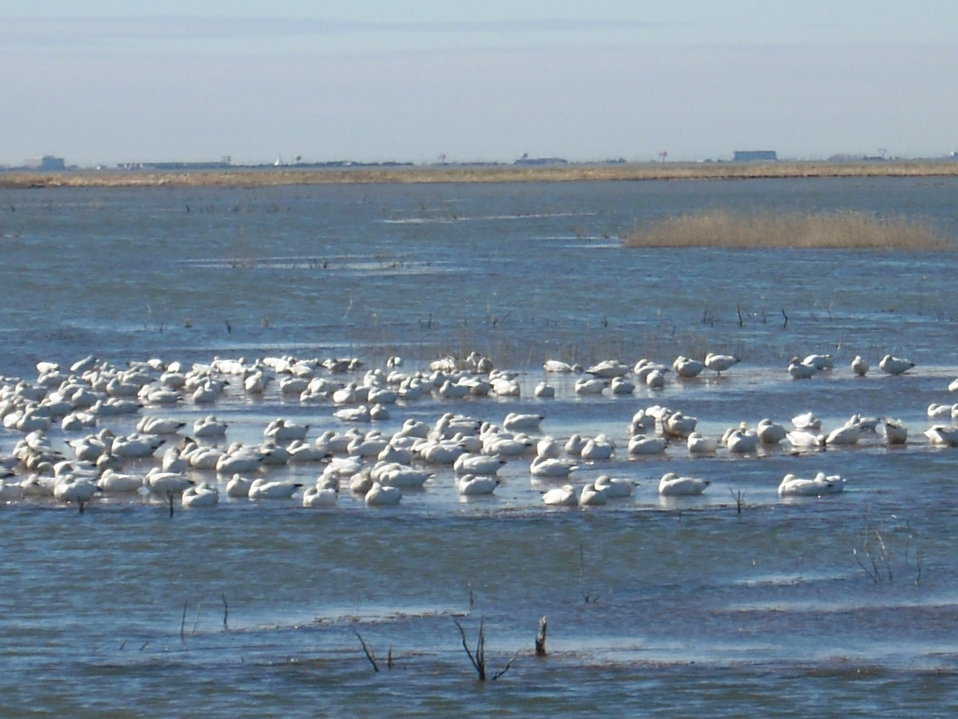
Shorebirds

Snow geese at E.B. Forsyther NWR.